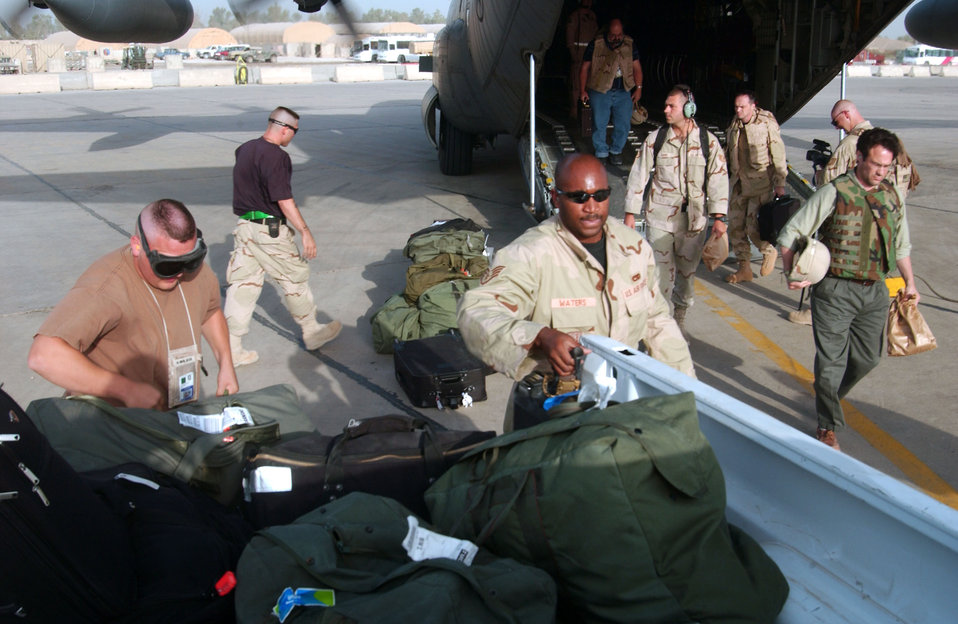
On the flightline at Sather Air Base

Airman guide cargo and passengers onto a C-130 Hercules at Sather Air Base, Iraq, on July 4.